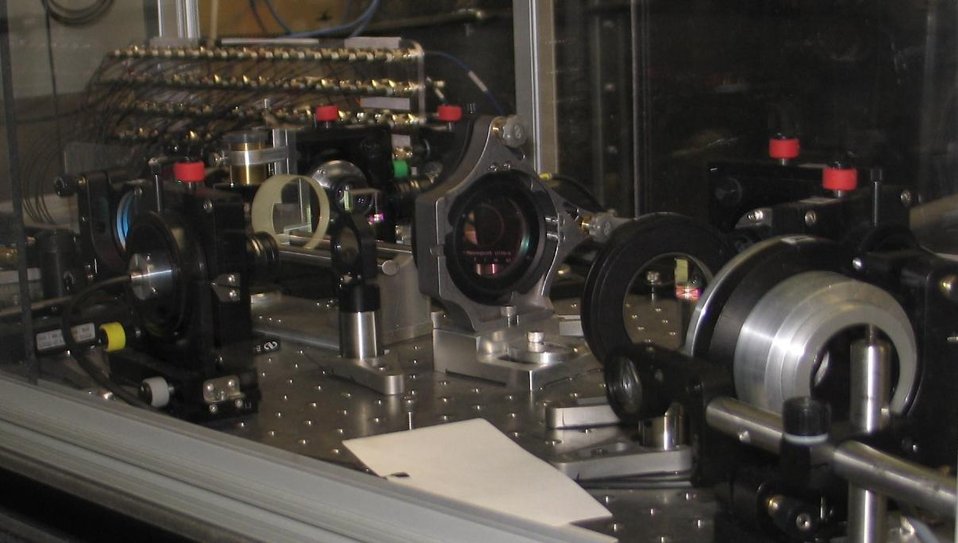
Velocity Interferometer System for Any Reflector (VISAR) is a diagnostic tool that determines the velocity of a moving material surface by measuring the Doppler shift in frequency of laser light as it is reflected from that surfaces.